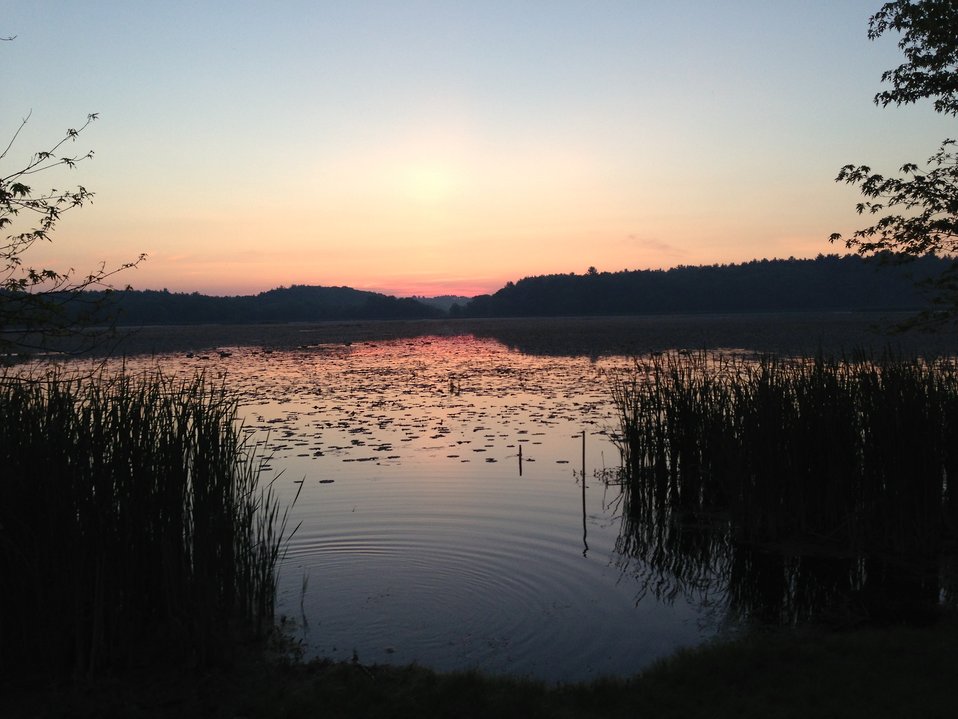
Marshbird Survey Sunrise

Sunrise, Great Meadows National Wildlife Refuge, Concord, MA

Credit: Steve Arena/USFWS

31 May 2013